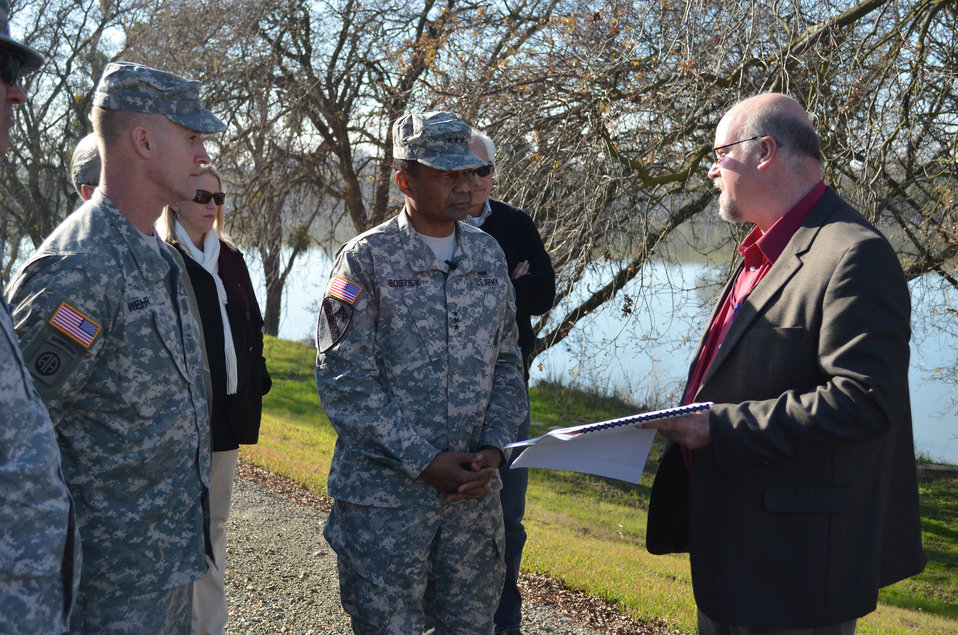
Corps commanding general visits Sacramento levees

Commanding general of the U.S. Corps of Engineers, Lt. Gen. Thomas P. Bostick (center), tours levees along the Sacramento River in Sacramento, Calif., Jan. 16, 2013, led by project manager, Dan Tibbitts (right). Also pictured: Brig. Gen. Michael Wehr, commander of the Corps’ South Pacific Division.